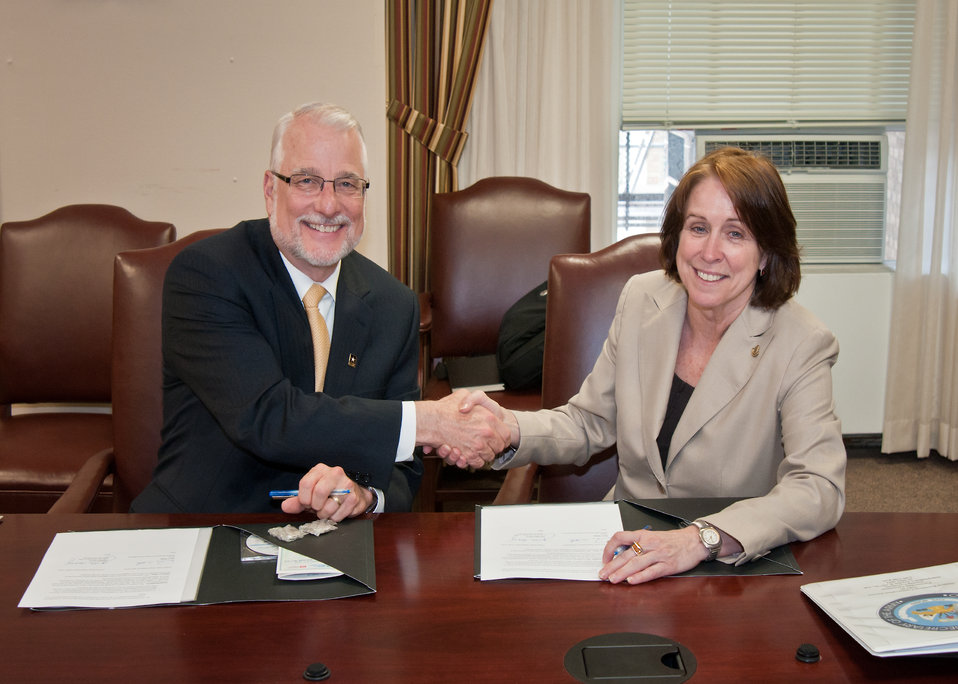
Dave White, Chief, Natural Resources Conservation Service and Jo-Ellen Darcy, Assistant Secretary Army, Civil Works signed a Memorandum of Agreement at the United States Department of Agriculture in Washington, DC, Thursday, May 26, 2011. The purpose of the MOU is to promote a long-term working relationship between the United States Department of Agriculture, Natural resources Conservation Service and the Office of the Assistant Secretary of the Army, Civil Works on collaborative efforts to improve the management of water and related natural resources under the missions and authorities of NRCS and the Department of the Army, Civil Works mission through the U.S. Army Corps of Engineers.